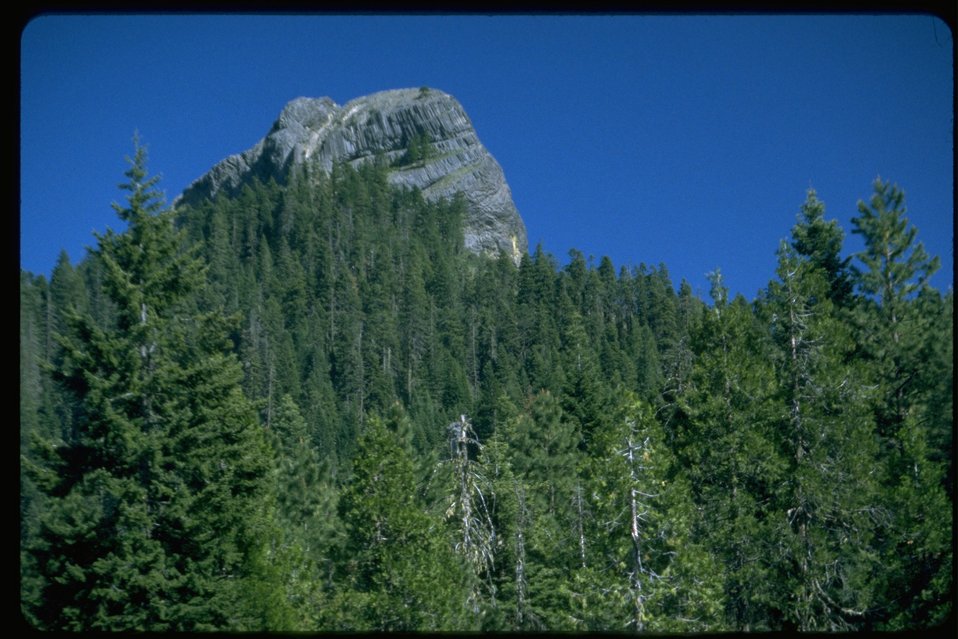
Pilot Rock Cascade-Siskiyou National Monument (SCNM).